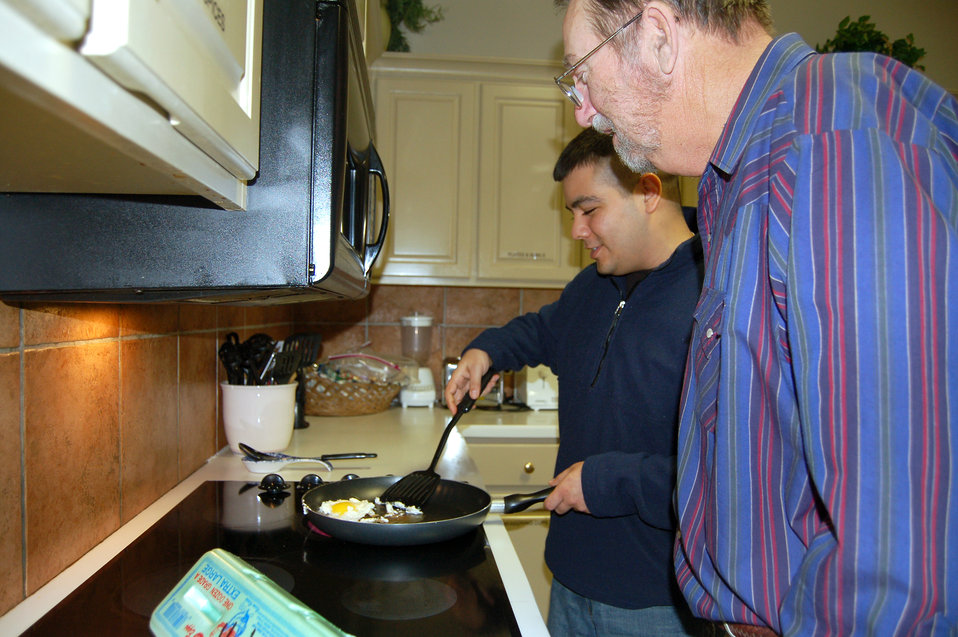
Fisher House offers help in times of crisis

Senior Airman Edward Alvarado and Tom Pennington strike up a conversation as Airman Alvarado cooks an egg in the kitchen of the Fisher House at Lackland Air Force Base, Texas. Residents at the Fisher House often become quite close because of their shared hardships. The Fisher House offers a place to stay for family members of people hospitalized at military medical centers.